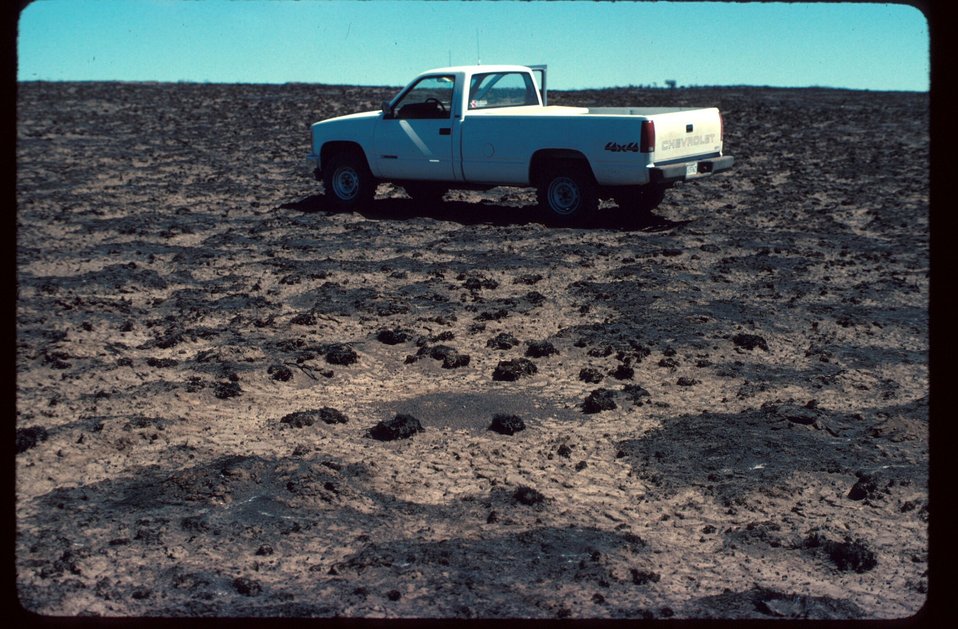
Fire Range Restoration Project Lower Snake River